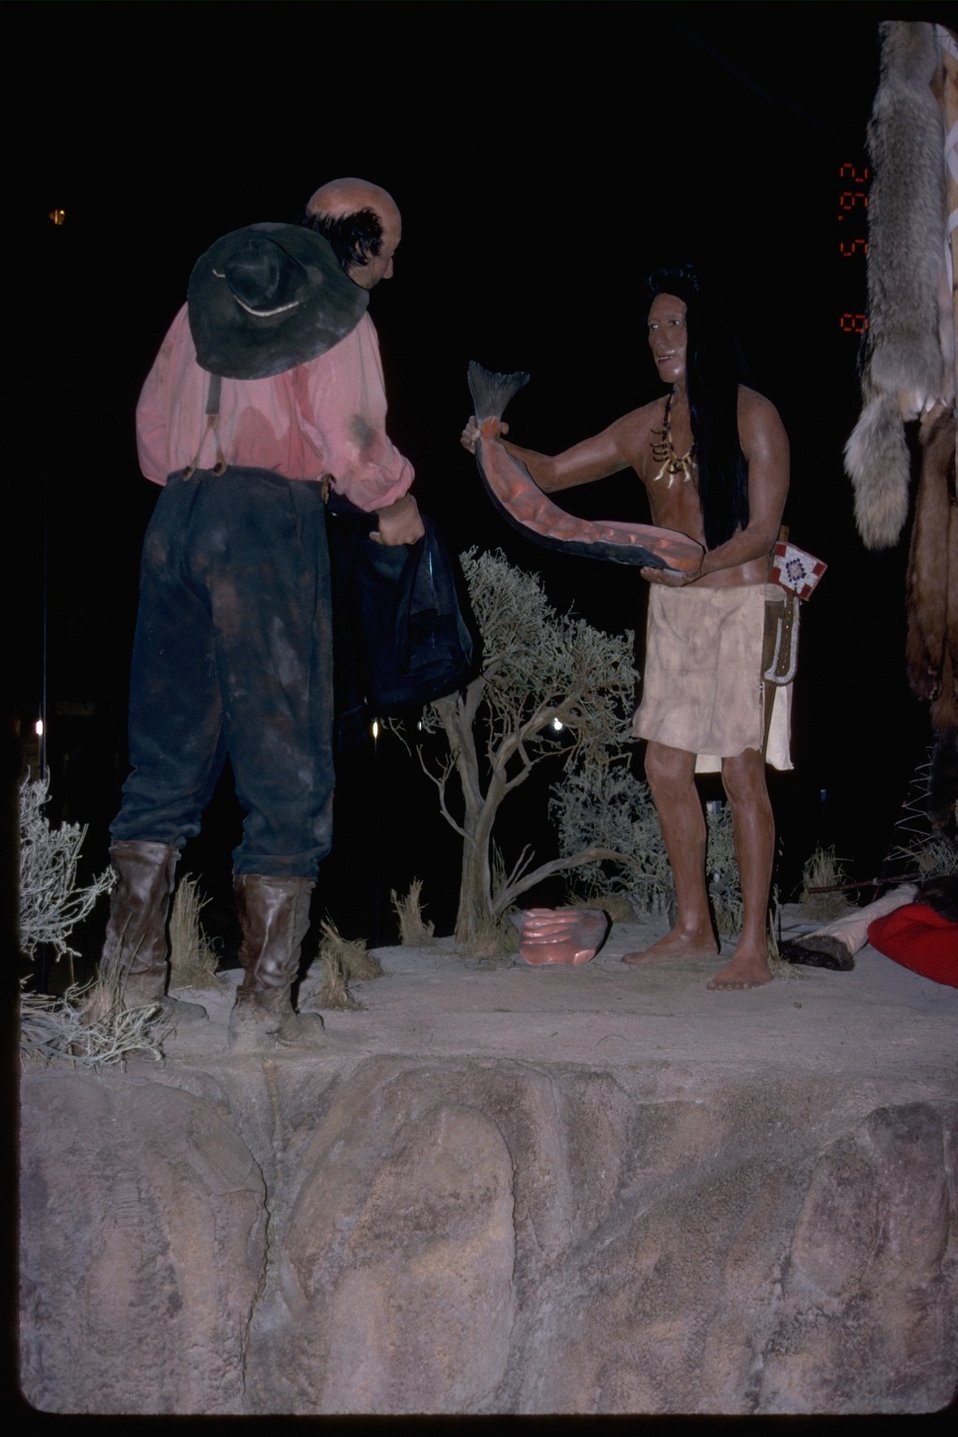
Exhibit at the NHOTIC.